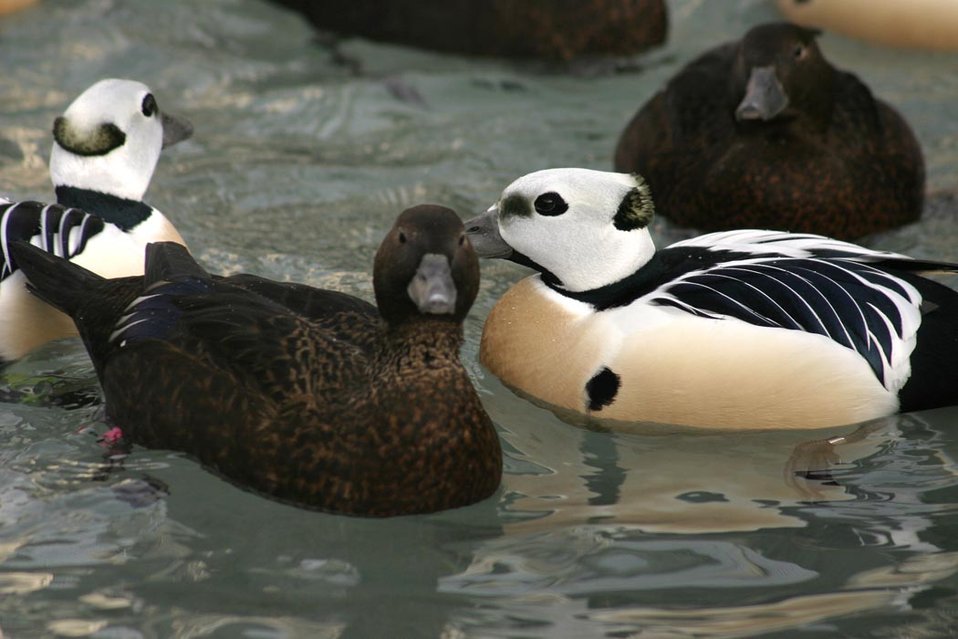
Threatened Steller's eider (Polysticta stelleri) males and females, Alaska SeaLife Center, Seward, Alaska